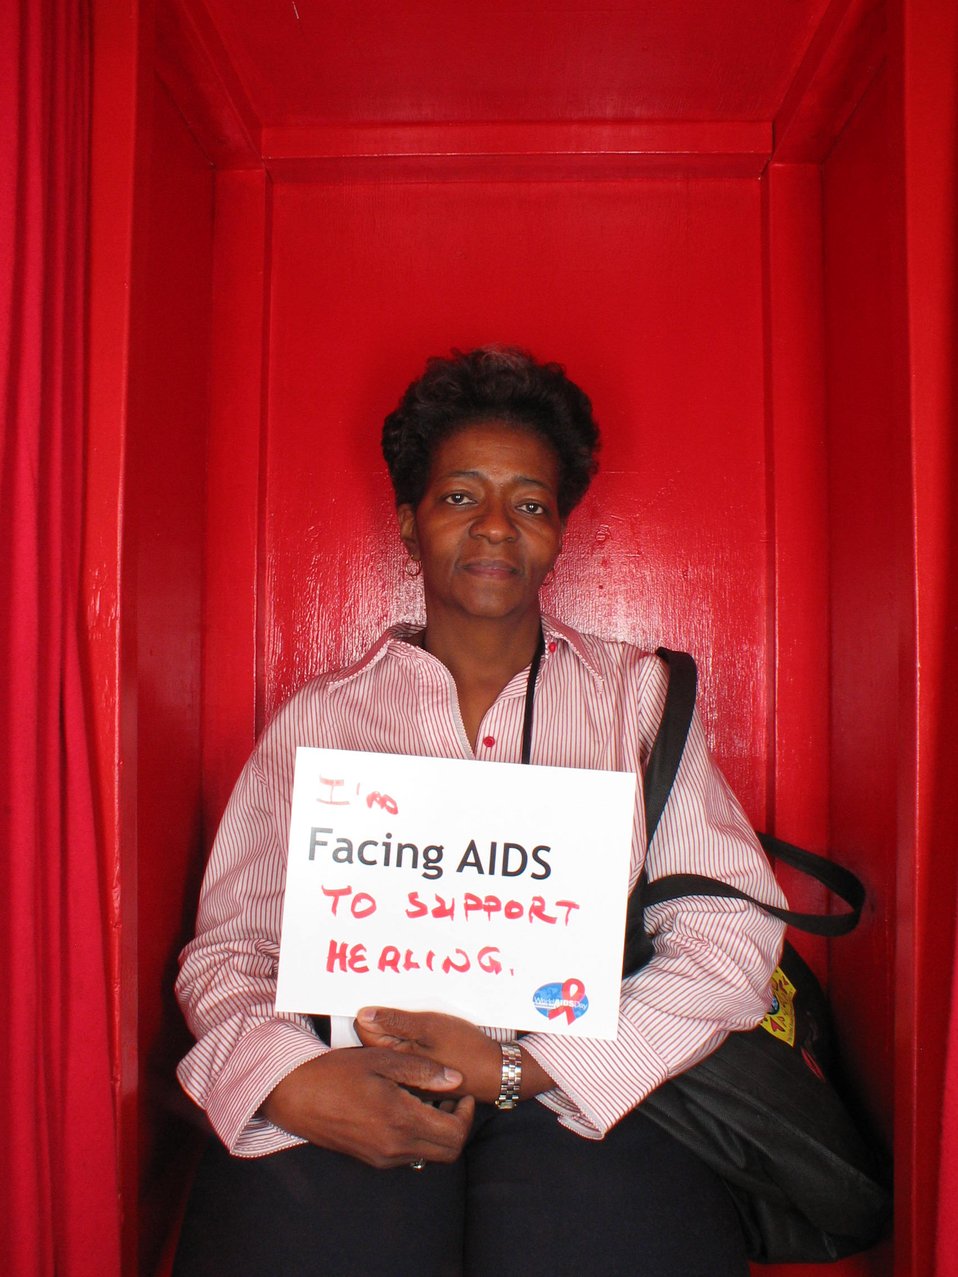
I'm Facing AIDS to support healing